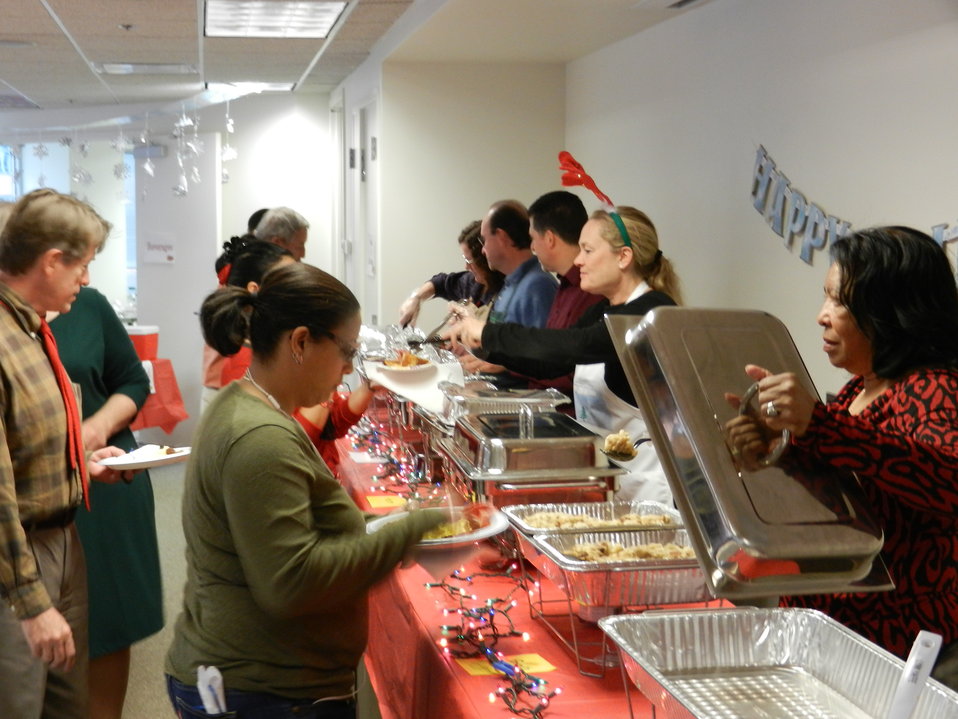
NWRS staffers serving guests